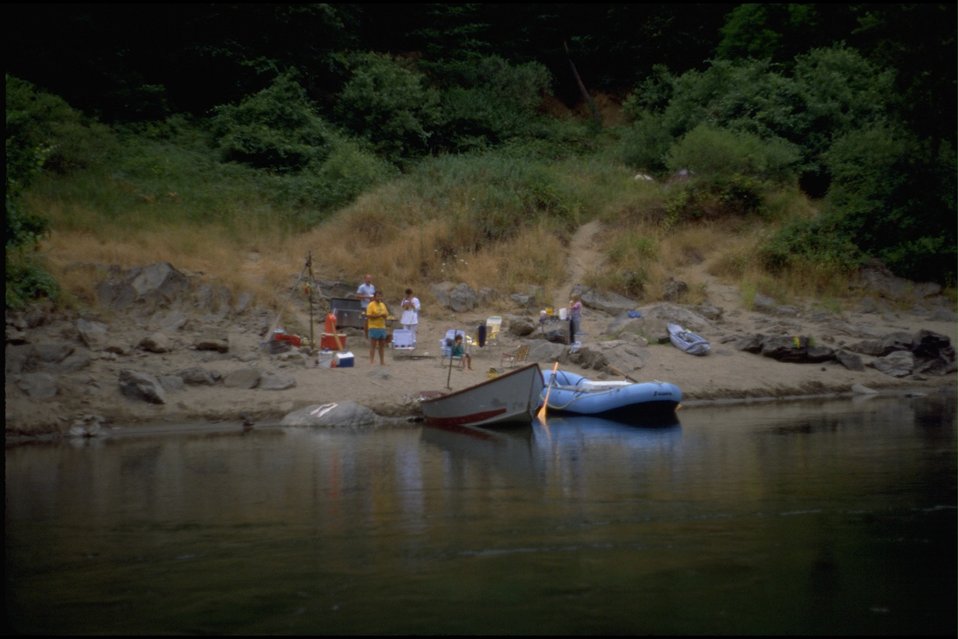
Rogue River - Little Windy Creek, river camp.